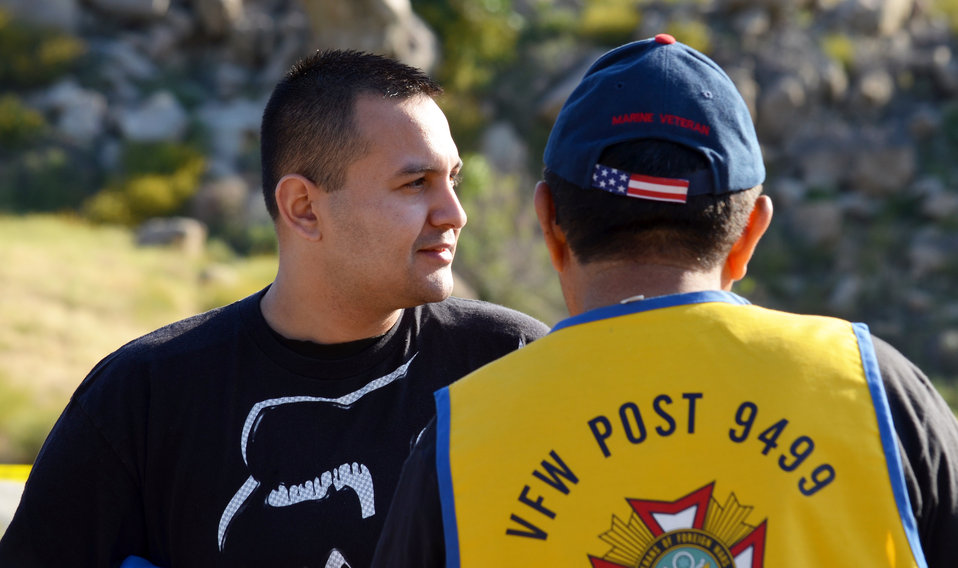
Take a Warrior Fishing 2014 at Pine Flat Lake

Veterans young and old gathered for fishing fun at Pine Flat Lake this past weekend. Pine Flat Lake, the U.S. Army Corps of Engineers Sacramento District park near Piedra, Calif., hosted Take a Warrior Fishing on May 3, 2014. The recreational event sponsored by Central Valley Veterans and their corporate donors, plus bright sunshine and good fishing, attracted 68 veterans and their families. A team of over 100 volunteers made sure veterans and their families enjoyed a day of fishing, fun and food.